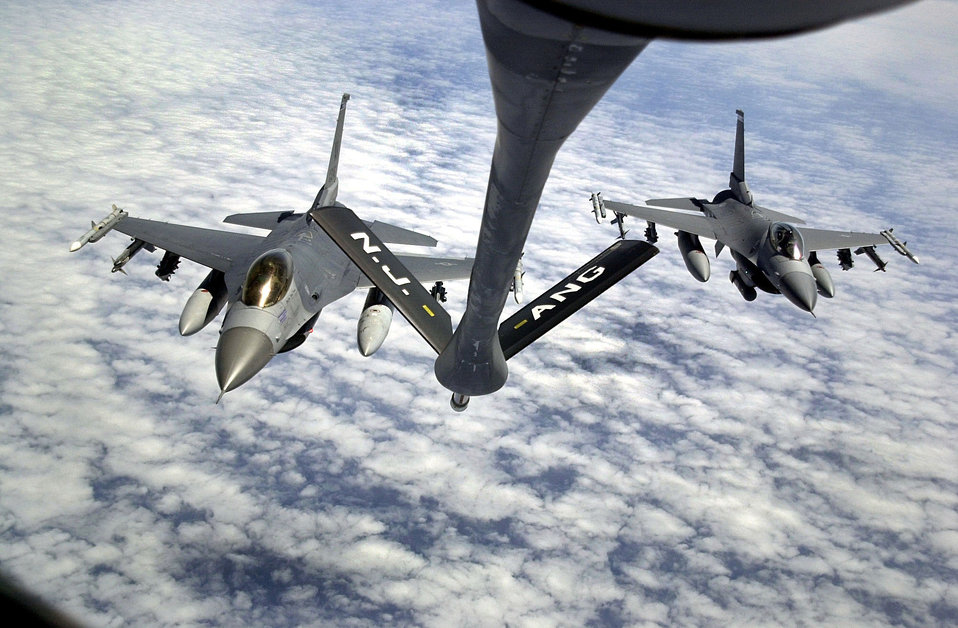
Falcons full

ISTRES, France -- Two F-16s from Aviano Air Base, Italy, drop away from the fuel boom after gassing up from a KC-135 Stratotanker over the Adriatic Sea. The jets were refueled by the New Jersey Air National Guard's 108th Air Refueling Wing, McGuire Air Force Base, N.J. The 108th ARW is part of the 16th Expeditionary Operations Group, a small U.S. Air Force detachment located on this French air base. The 16th Expeditionary Operations Group is a unit of the 16th Air Expeditionary Wing, U.S. Air Forces in Europe.